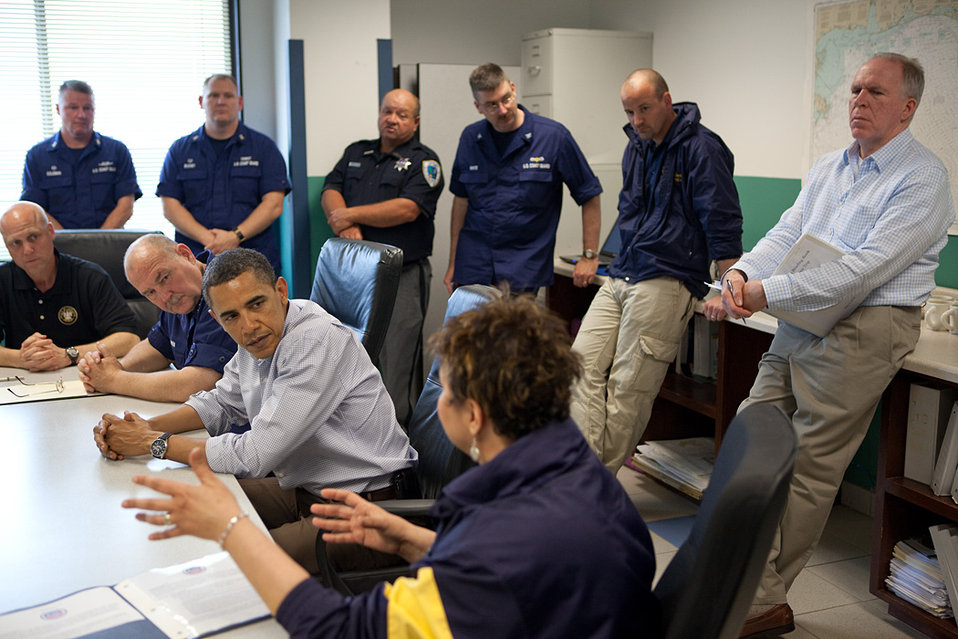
Administration Responds to BP Oil Spill

May 2, 2010 - President Barack Obama listens to EPA Administrator P. Lisa Jackson during a briefing about the state of the Gulf Coast after the BP oil spill, at the Coast Guard Venice Center, in Venice, La.. U.S. Coast Guard Commandant Admiral Thad Allen is seated next to the President and Assistant to the President for Homeland Security and Counterterrorism John Brennan stands at right.